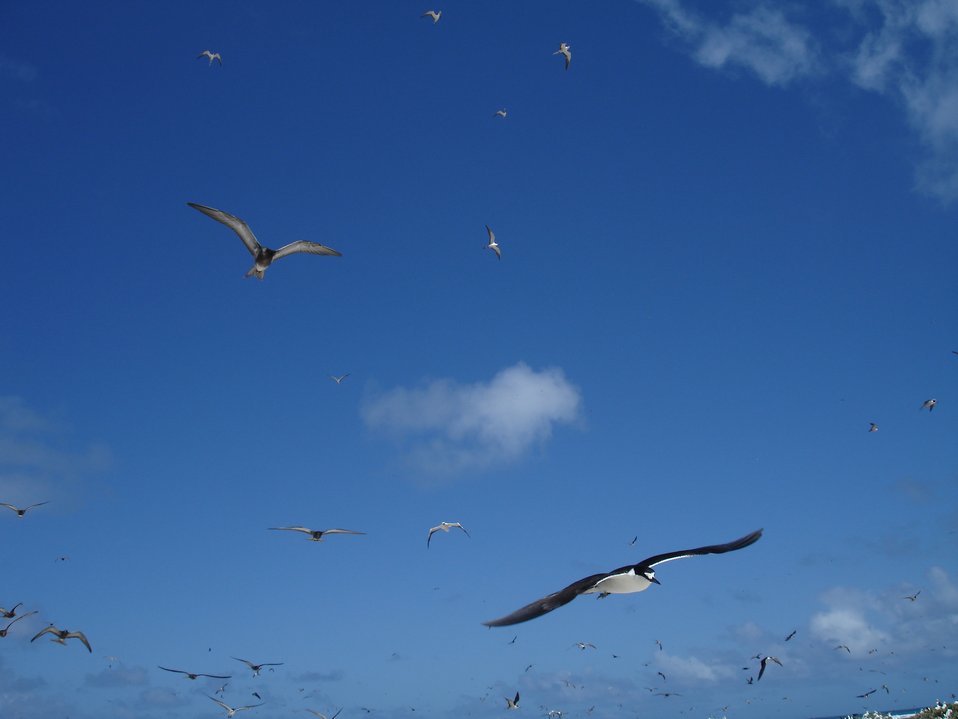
Sooty terns in flight